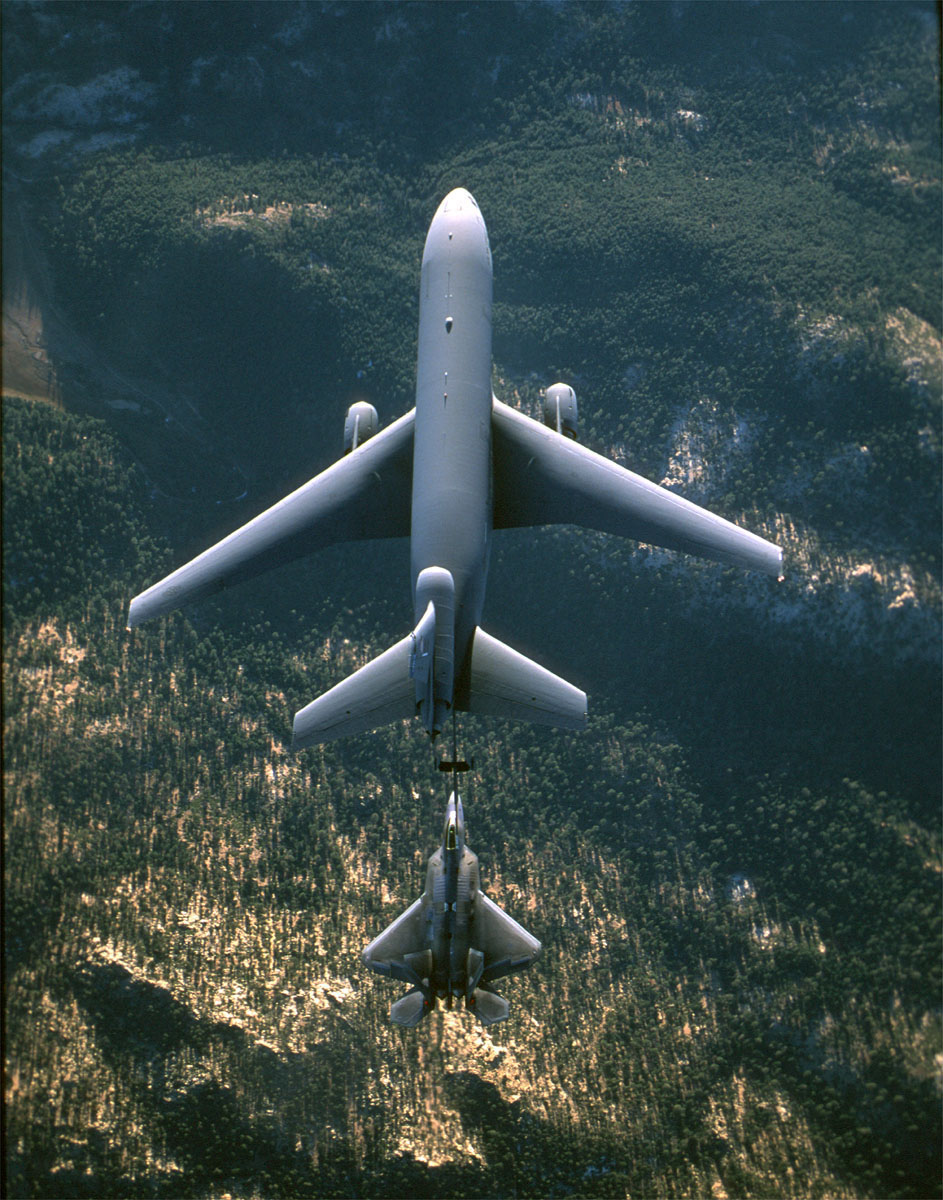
Follow me

FILE PHOTO -- A KC-10 Extender from Travis Air Force Base, Calif., refuels an F/A-22 Raptor. The Raptor is the replacement for the F-15 Eagle. It is the most advanced fighter aircraft in the world, combining a revolutionary leap in technology and capability with reduced support requirements and maintenance costs. The F/A-22's integrated avionics gives it first-look, first-shot, first-kill capability that guarantees U.S. air dominance for decades.